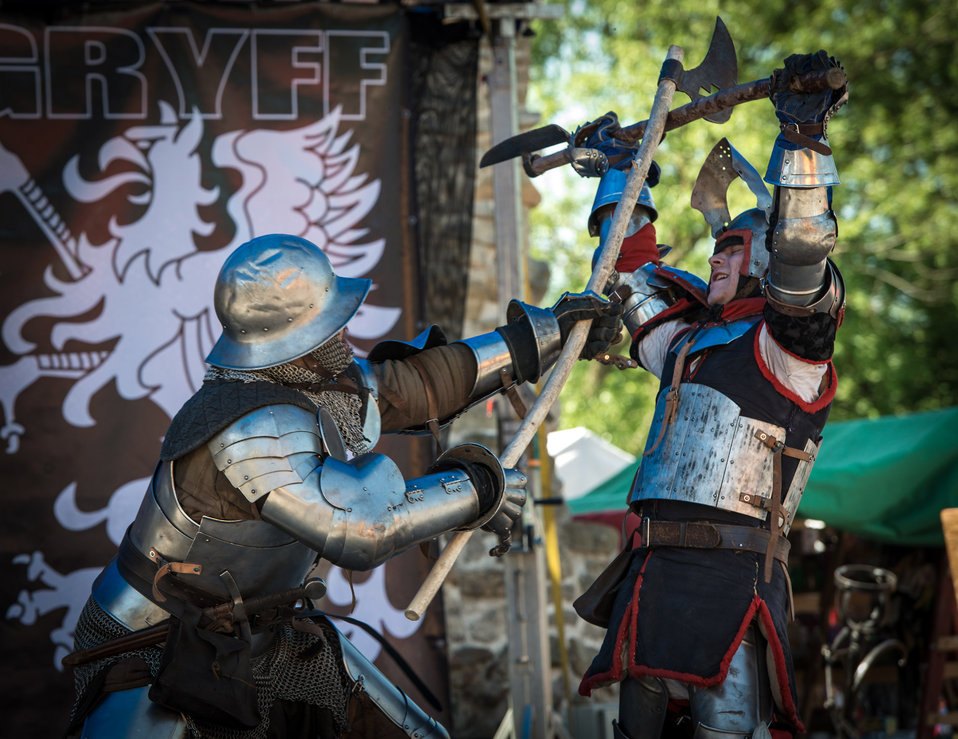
Duel

Knight duel.